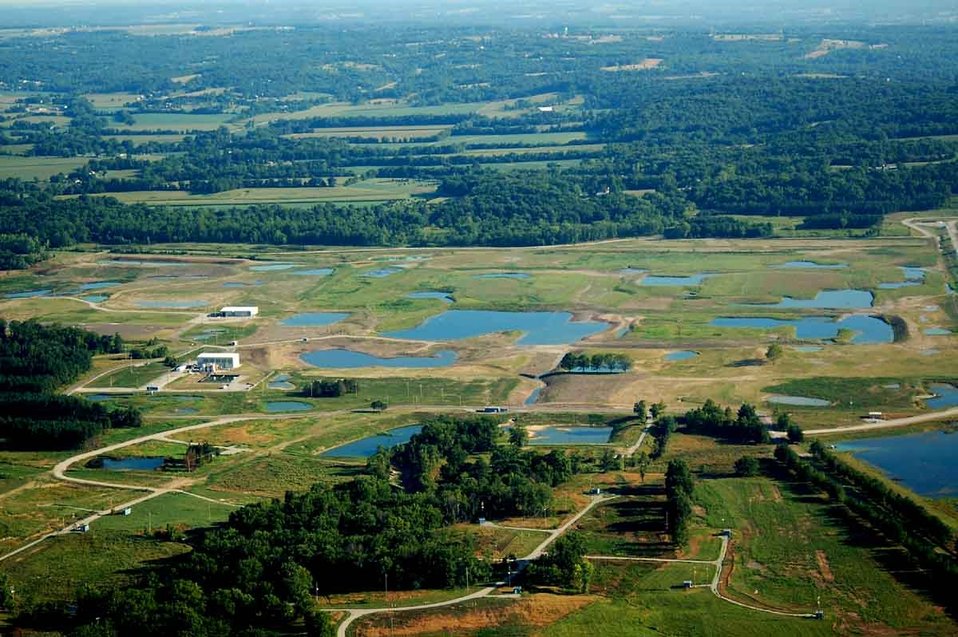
Fernald Weapons Facility Park

Fernald - after